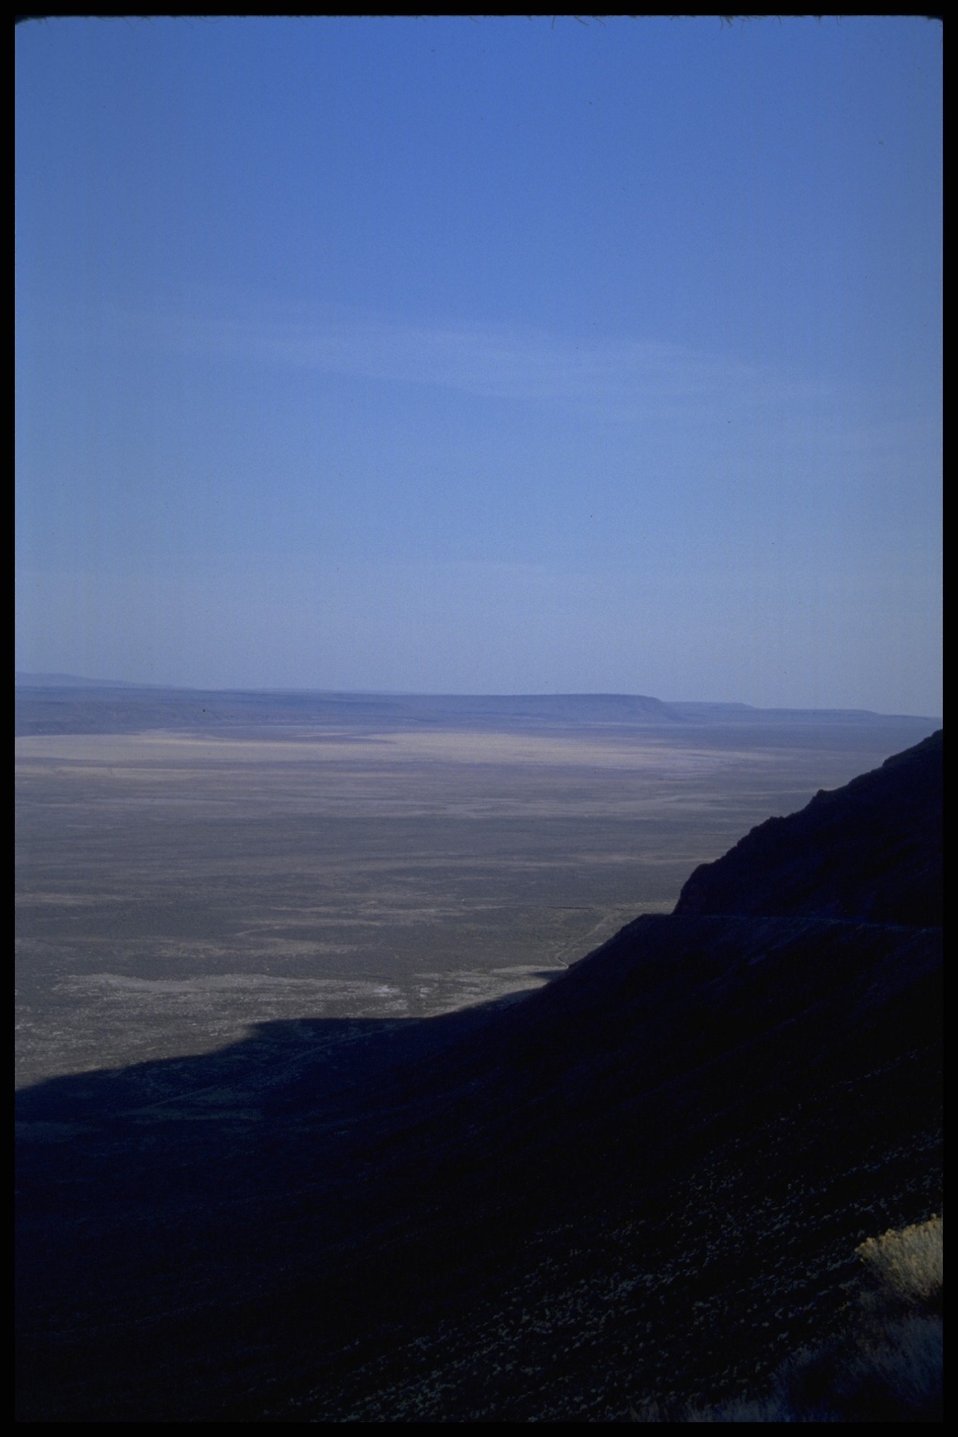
Scenic view of Guano Valley, Lakeview District.